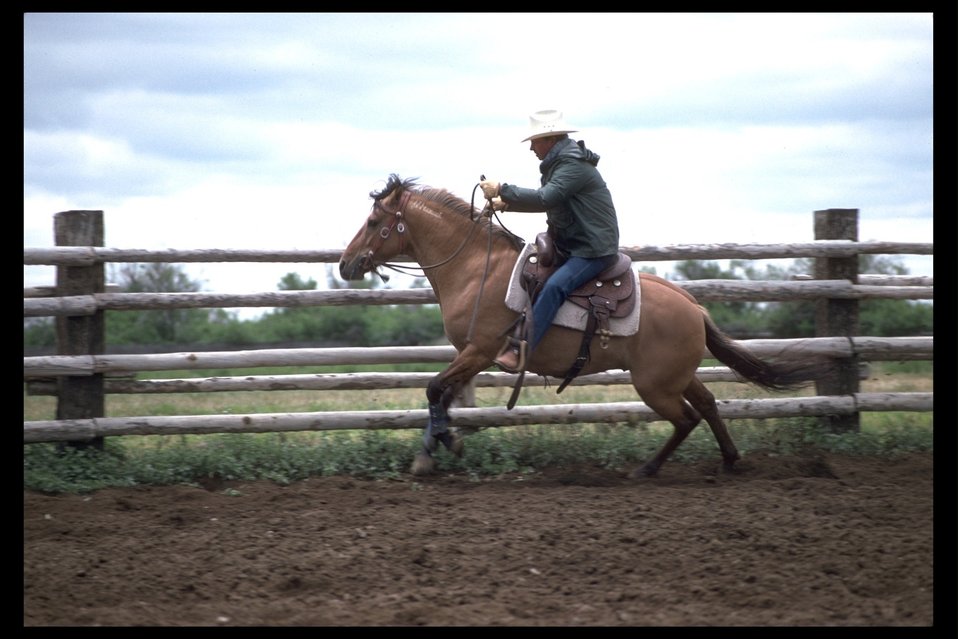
Bobby Ingersol on "Kiger Cougar", an adopted kiger mustang, at Bell A Ranch arena in Burns.